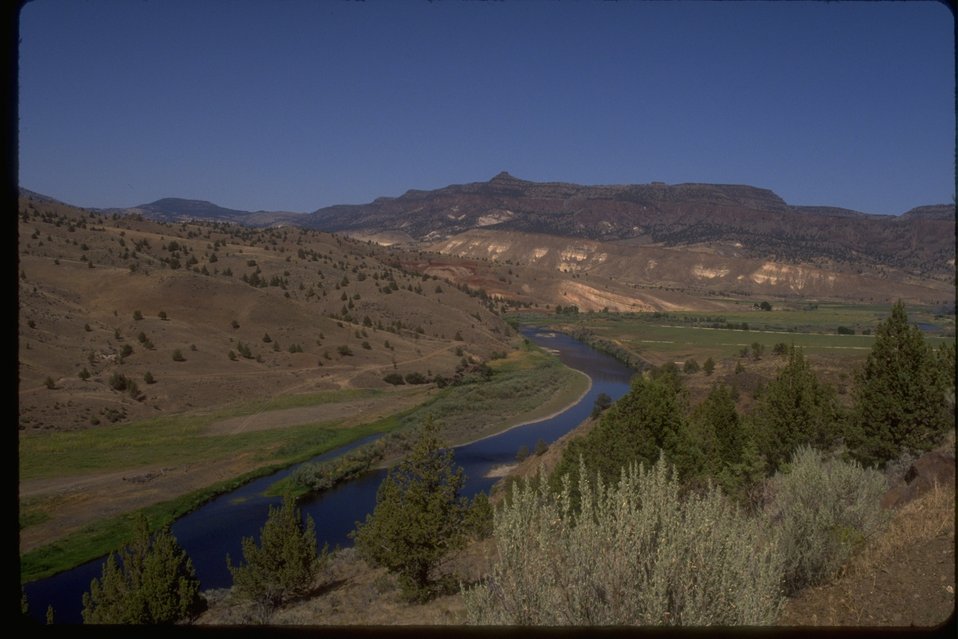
John Day River area.